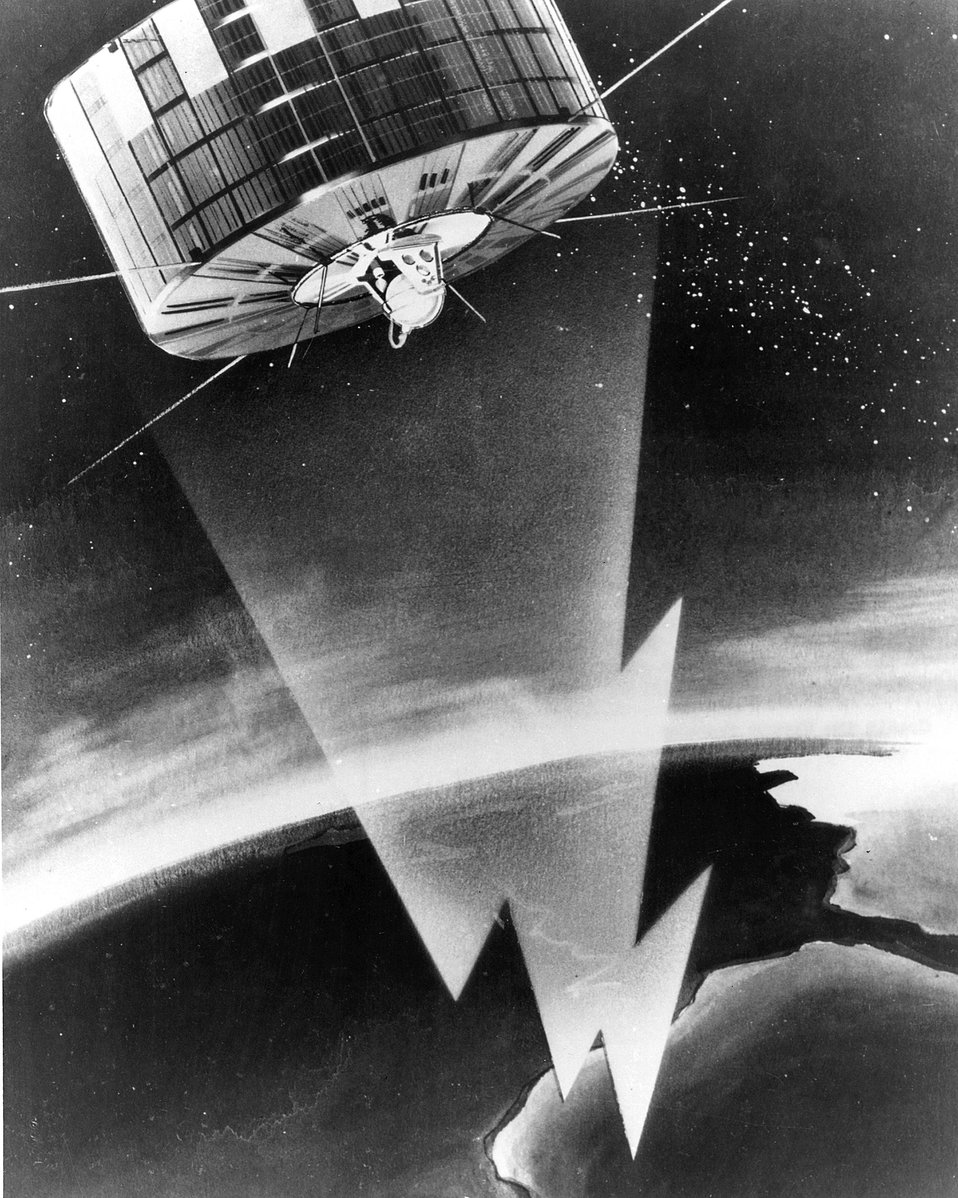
A SNAP nuclear generator which is providing power for the Navy's navigational satellite is shown in artist's drawing.